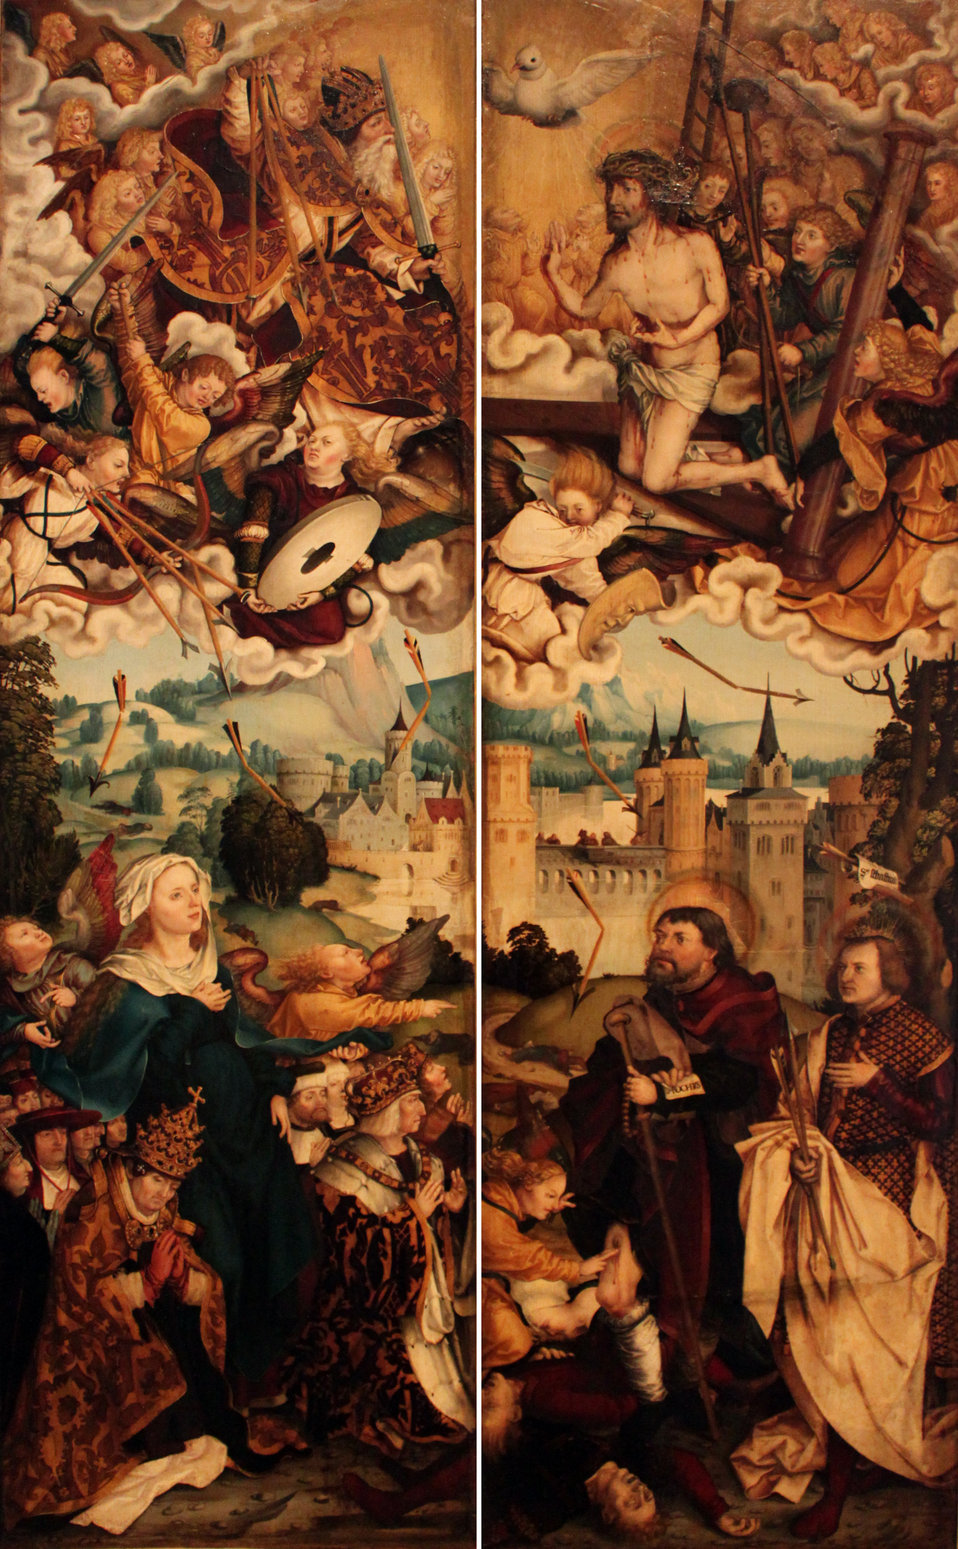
1513 Schaffner Flügel Pestaltar Augustinerkloster zu den Wengen in Ulm anagoria